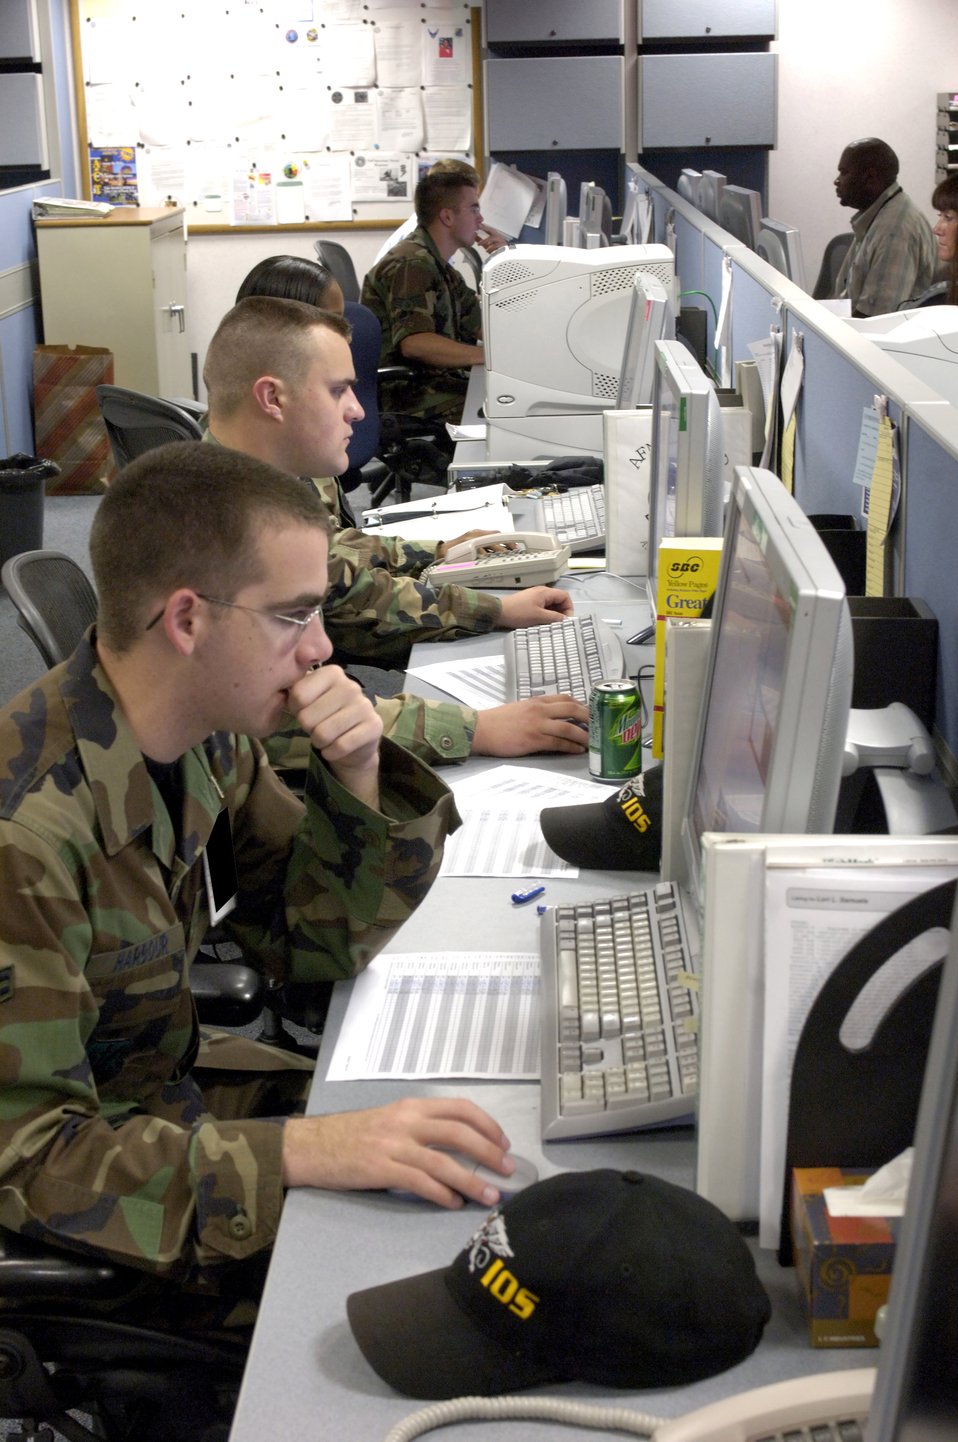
New wing brings Air Force dominance to cyberspace

Airmen with the 67th Network Warfare Wing monitor internet activity to maintain security of Air Force computer networks at Lackland Air Force Base, Texas, on Friday, July 7.